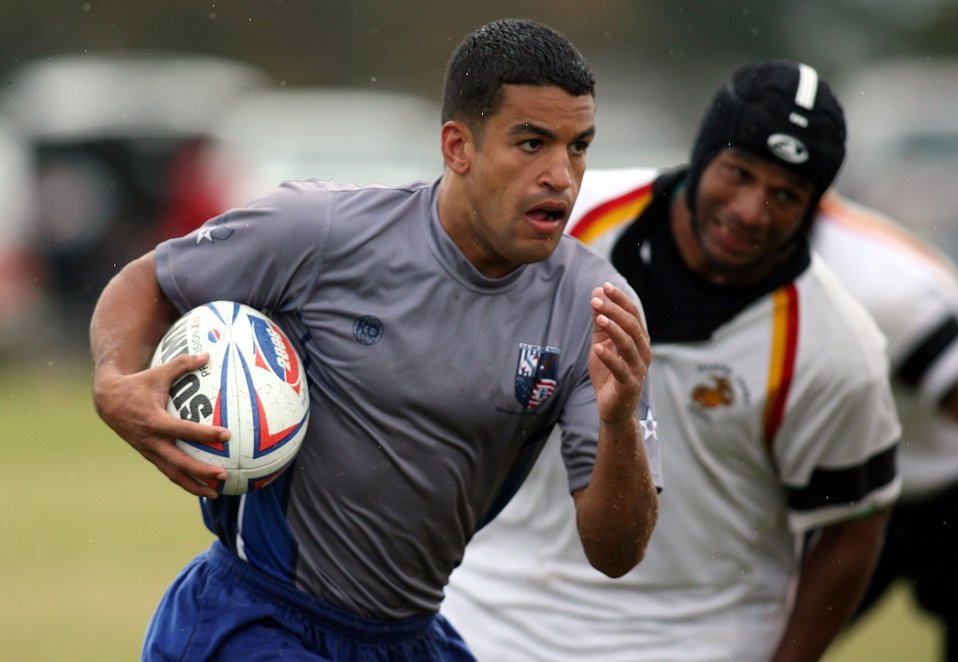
AF rugby team wins third straight Armed Forces title

Air Force 1st Lt. David Pina runs past Army defenders during their match Oct. 23 at the Armed Forces Rugby Championship at Camp Lejeune, N.C. The Air Force team, which went on to win its third consecutive tournament title, edged the Army team 5-3.